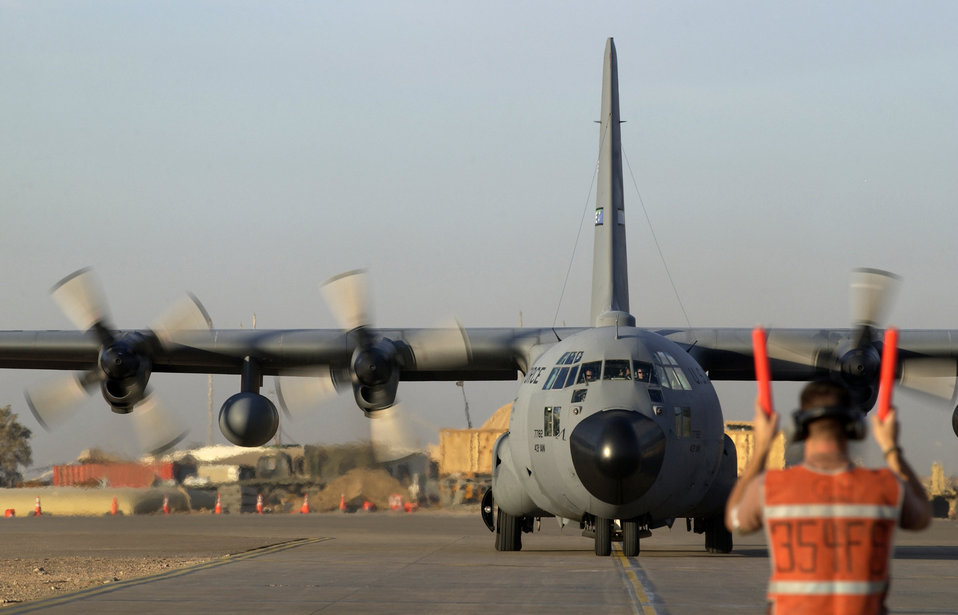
Follow me

SOUTHWEST ASIA -- A C-130 Hercules from the 379th Air Expeditionary Wing is marshaled into a parking spot here Dec. 4. The C-130s are supporting both operations Iraqi Freedom and Operation Enduring Freedom from a forward deployed location in Southwest Asia.